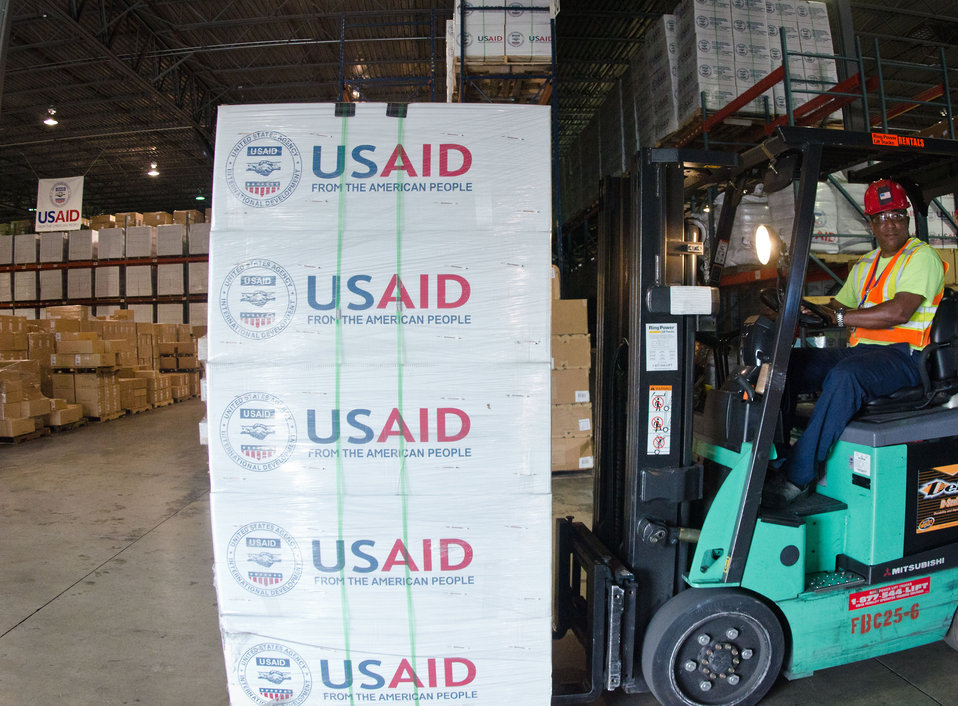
Crowley Logistics in Miami, FL on Friday, August 26, 2011 is one of three U.S. Agency for International Development (USAID) shipping and logistics facilities in the nation. In times of emergency humanitarian relief aid, they can respond with supplies delivered to aircraft at Miami International Airport within two hours. They utilize articulating forklifts, which hinge in the middle to store and retrieve pallets of supplies through narrow aisle ways. This allows for a higher density of stored supplies in the warehouse. Pallets of supplies are stacked three levels high. USAID provides humanitarian assistance through the Office of U.S. Foreign Disaster Assistance (OFDA). OFDA is the lead U.S. Government (USG) office charged with providing and coordinating USG humanitarian assistance in response to international emergencies and disasters. To achieve this, USAID works in cooperation with other USG offices such as the U.S. Department of Agriculture (USDA), and international humanitarian experts. The USDA provides food assistance to support emergency feeding programs in countries experiencing food shortages due to drought and civil conflict.